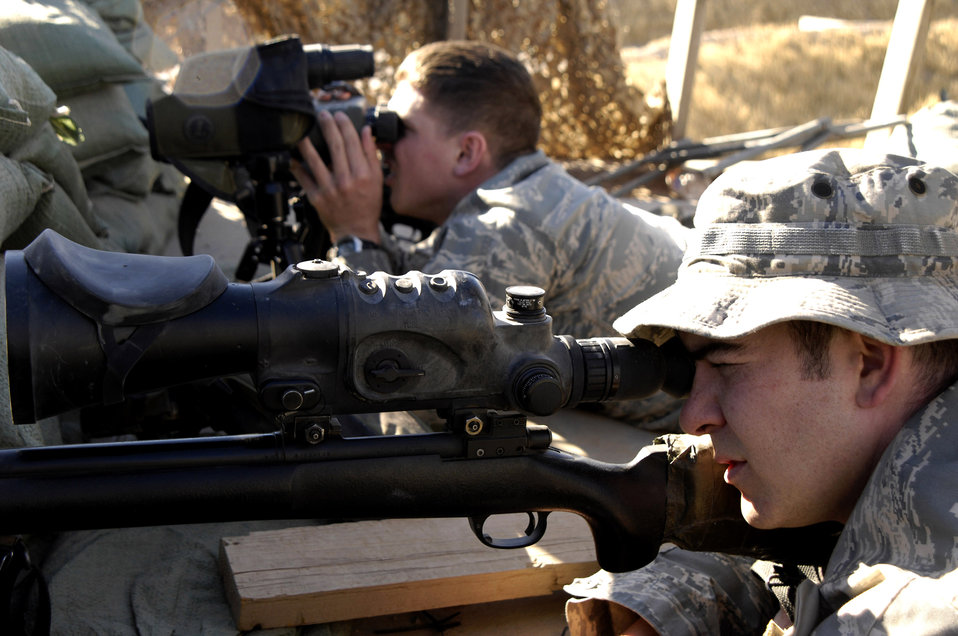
Air Force sharpshooters provide extra eyes outside the wire

Staff Sgt. Curtis Huffman (background) and Airman 1st Class Matt Leeper set up surveillance on top of a lookout point Nov.13 near Kirkuk Air Base, Iraq. The Airmen are with the 506th Expeditionary Security Forces Squadron Close Precision Engagement team. The CPET members train as anti-sniper teams to target terrorist and insurgent snipers attacking U.S. and coalition forces in the area.The Airmen are deployed from the 354th Security Forces Squadron at Eielson Air Force Base, Alaska.